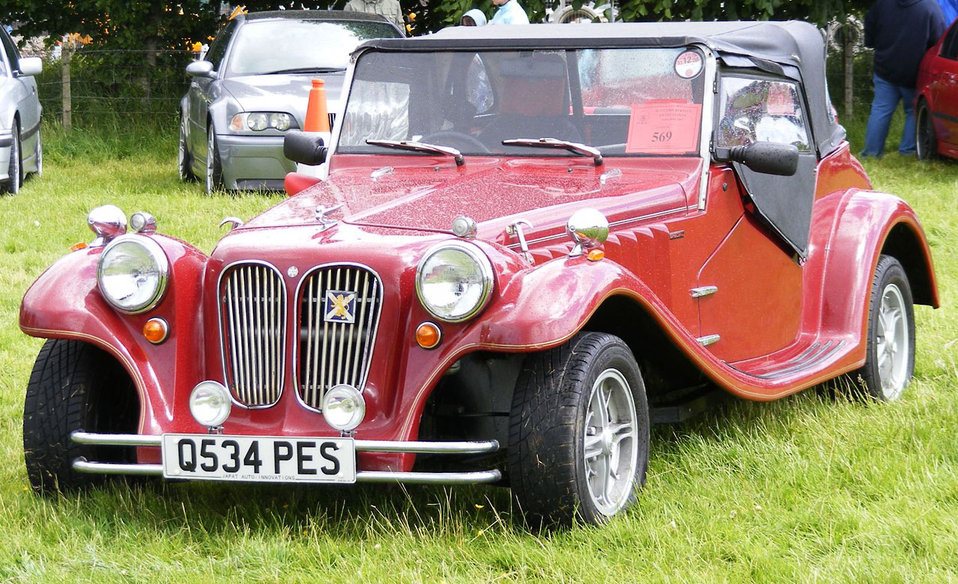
Vintage car

Taken at static car rally in 2008.